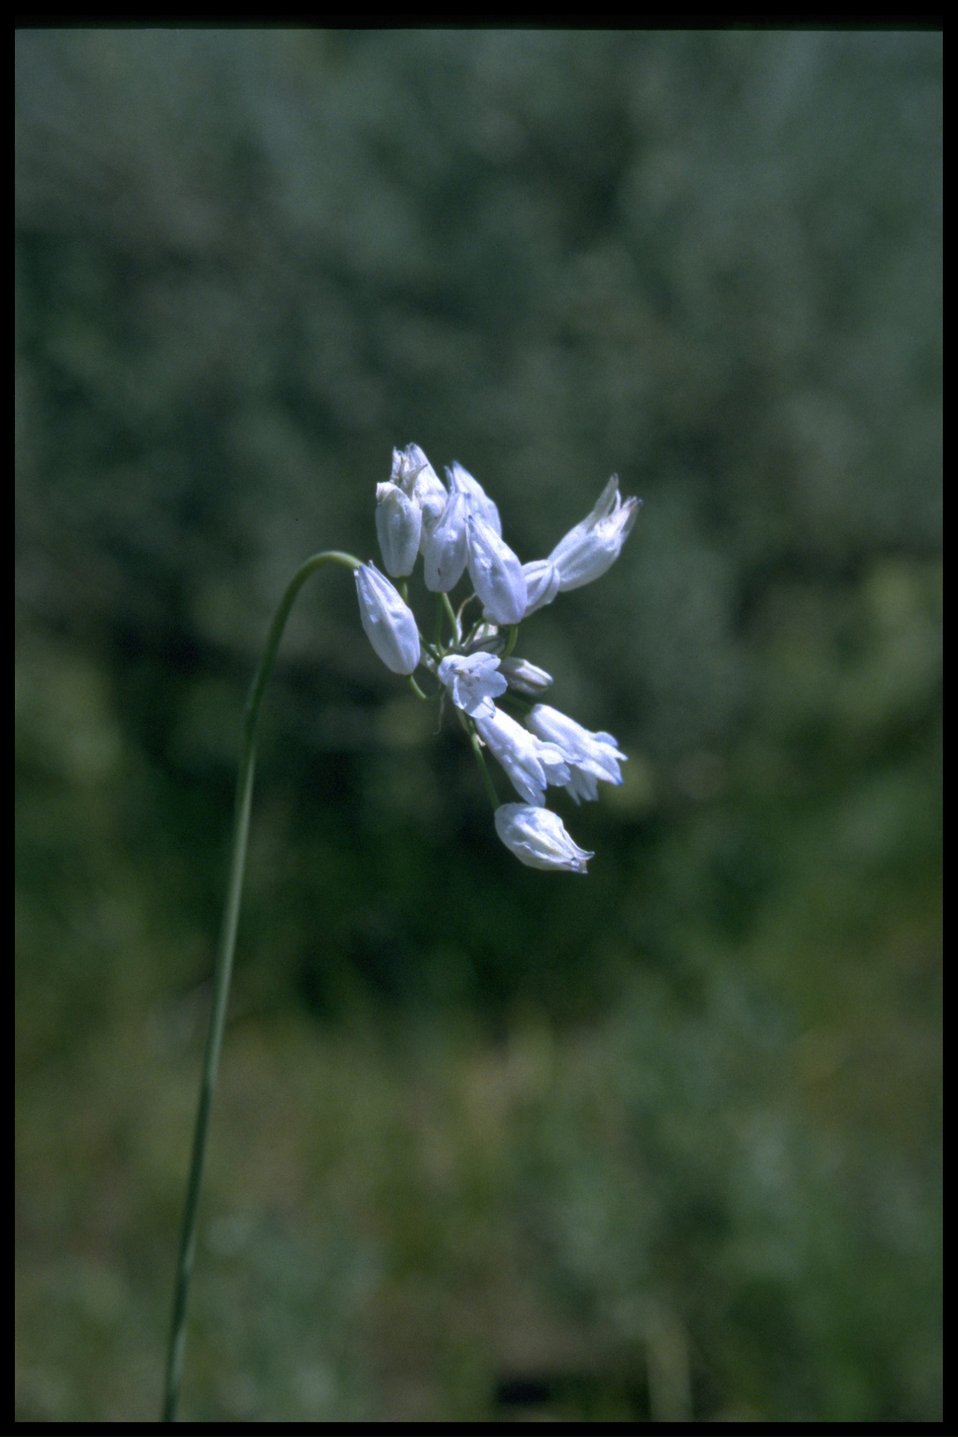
Closeup shot of Douglas' Brodiaea (pale blue-white) wildflower.